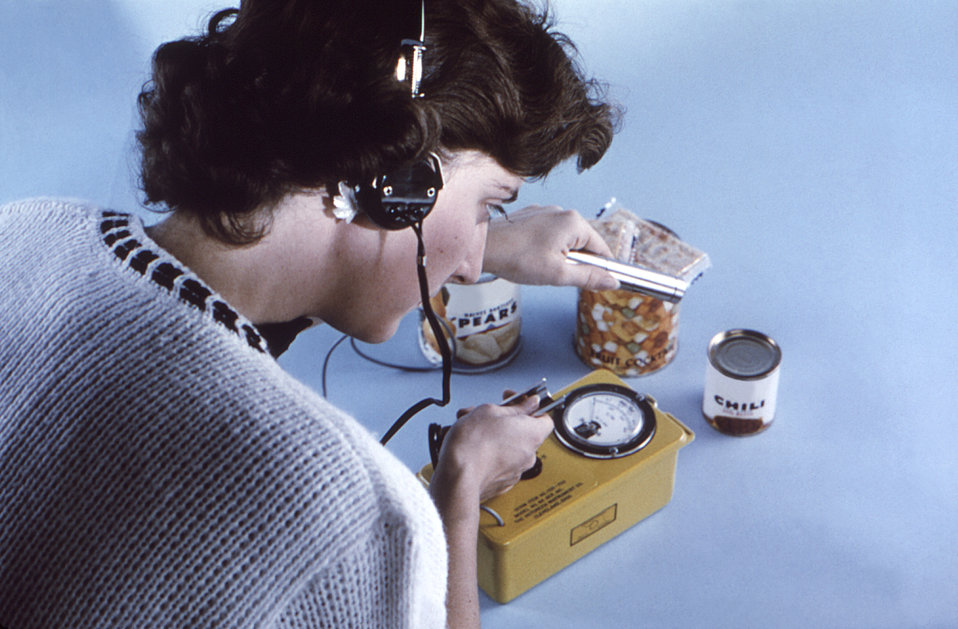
This 1963 image depicted a Centers for Disease Control staff member, as she was surveying foods for fallout contaimination with a Geiger-M�counter.